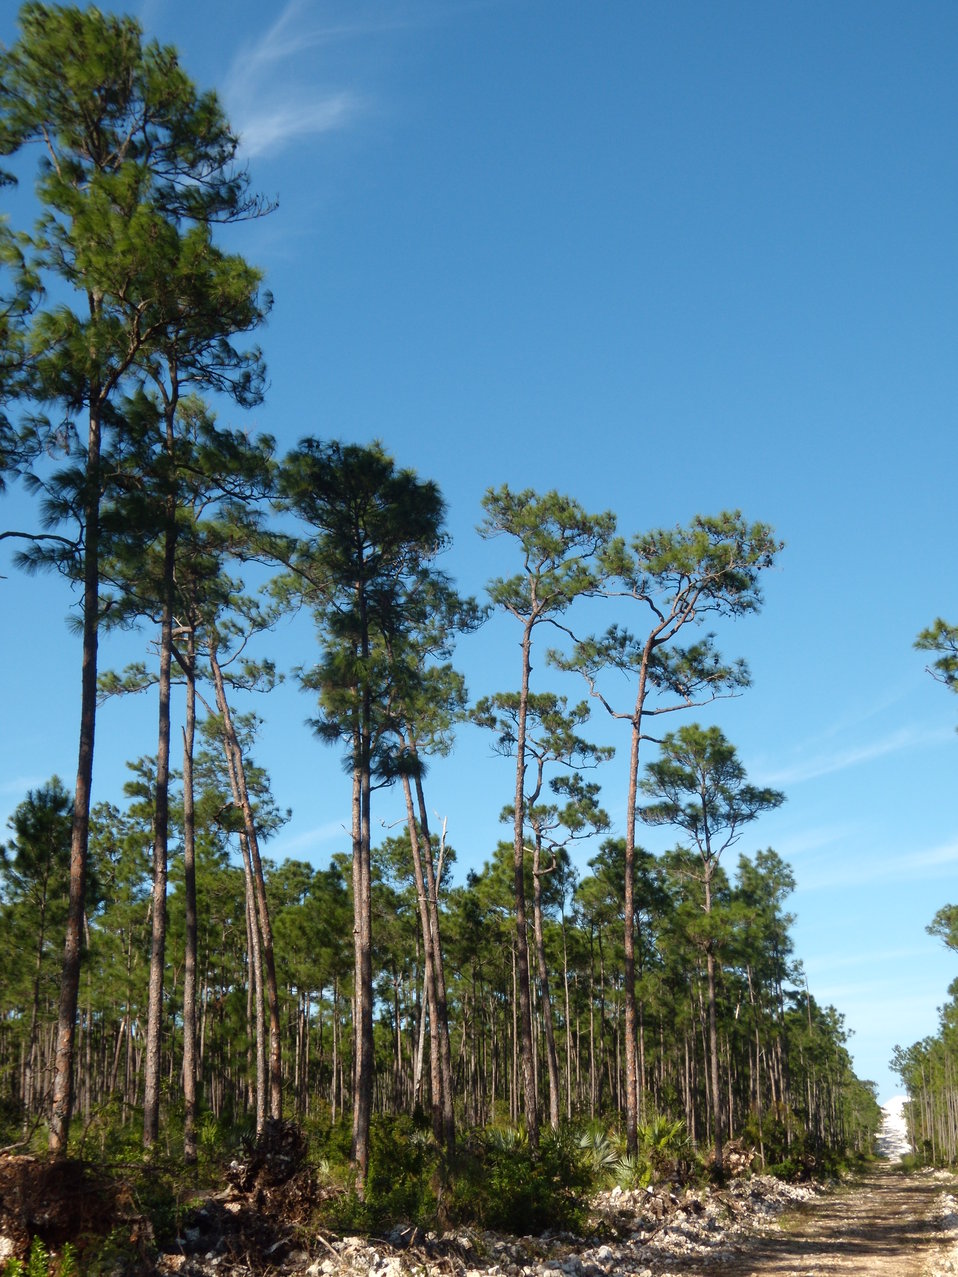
Caribbean pine forest on interior part of South Andros Island.